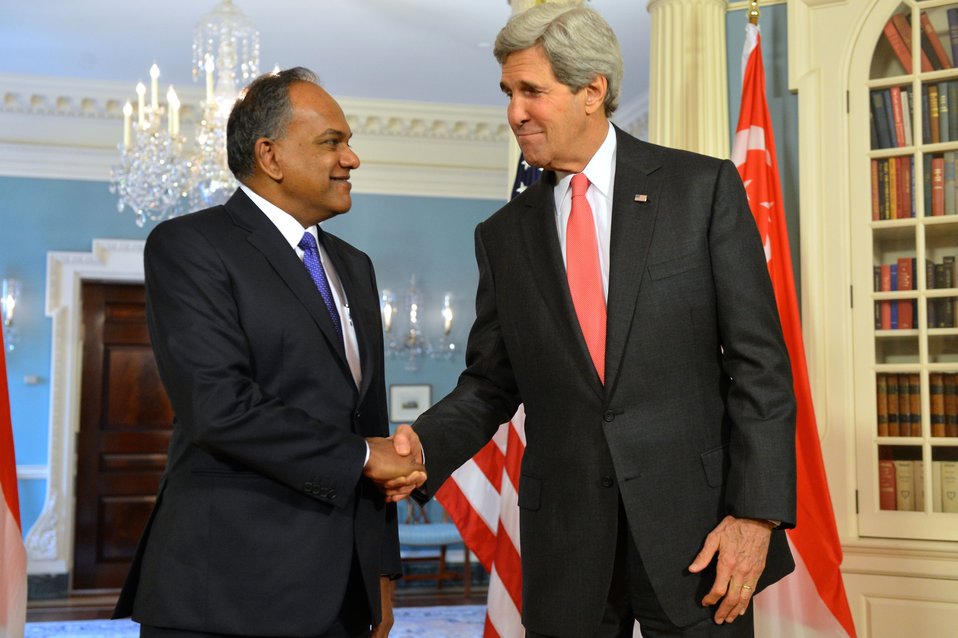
Secretary Kerry Meets With Singaporean Foreign Minister K. Shanmugam

U.S. Secretary of State John Kerry meets with Singaporean Foreign Minister K. Shanmugam at the U.S. Department of State in Washington, D.C., on May 12, 2014.